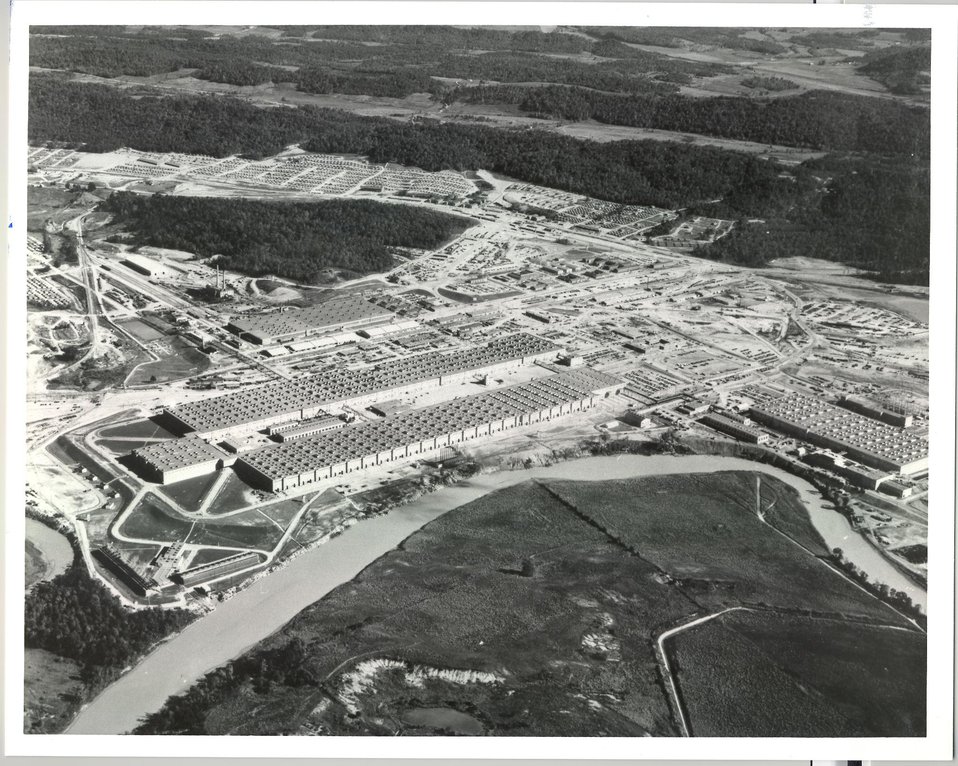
Aerial View of K-25 Plant Area, Looking SE, Trailer Par.